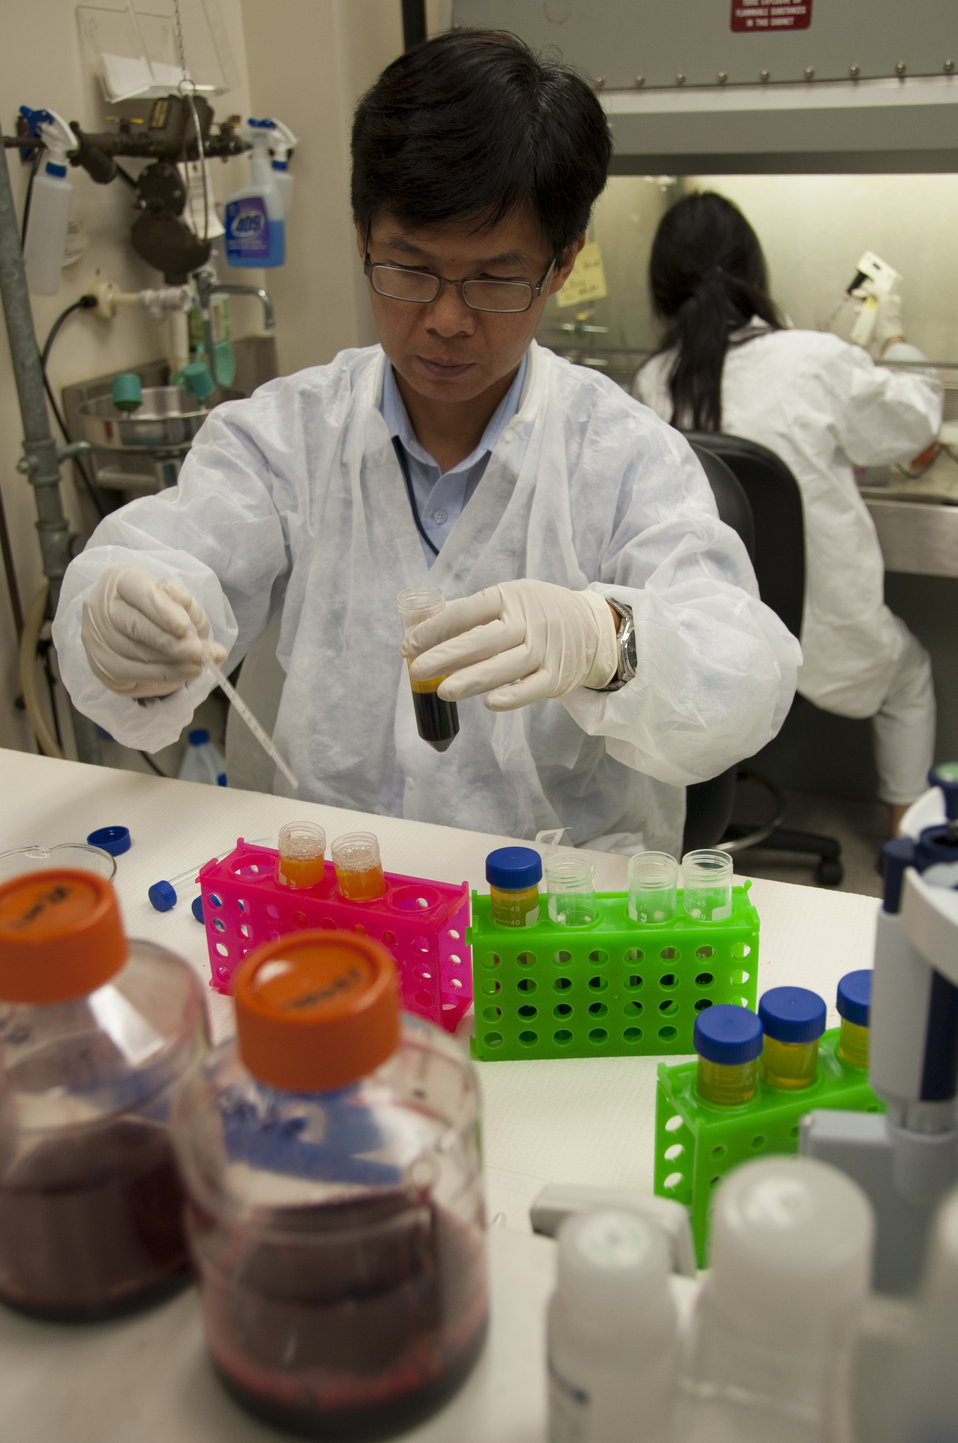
Blood Research: Saving Lives (8511)

Jason Liu, Ph.D., a laboratory chief at FDA’s Office of Blood Research and Review, collects plasma from processed whole blood. FDA is responsible for the safety of our nation’s blood supply and is at the forefront of evaluating and encouraging innovative technologies for protecting it.

Read this Consumer Update to learn more: Advances in Saving Lives with Blood